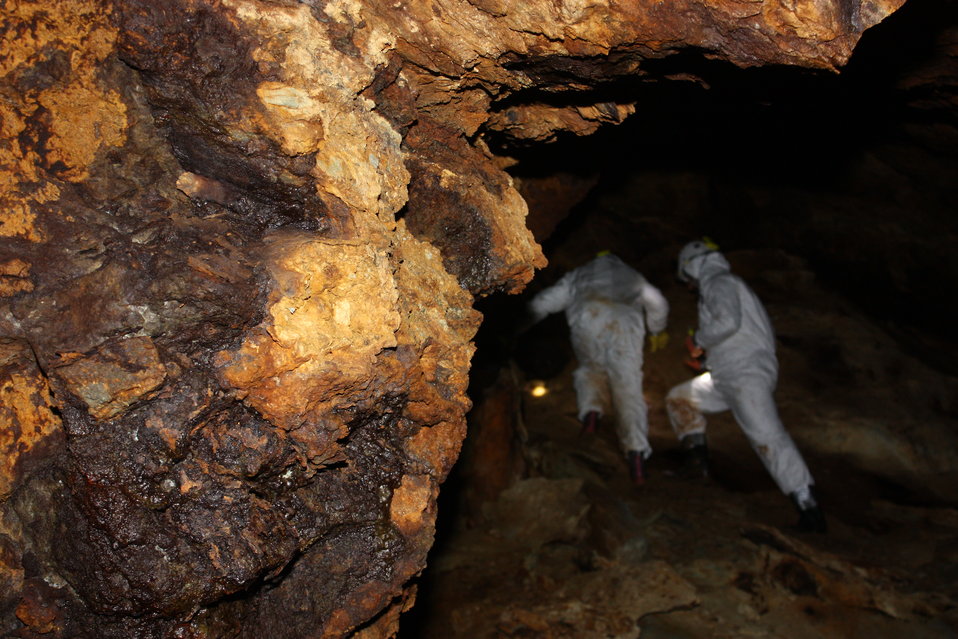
Rock formation with biologists